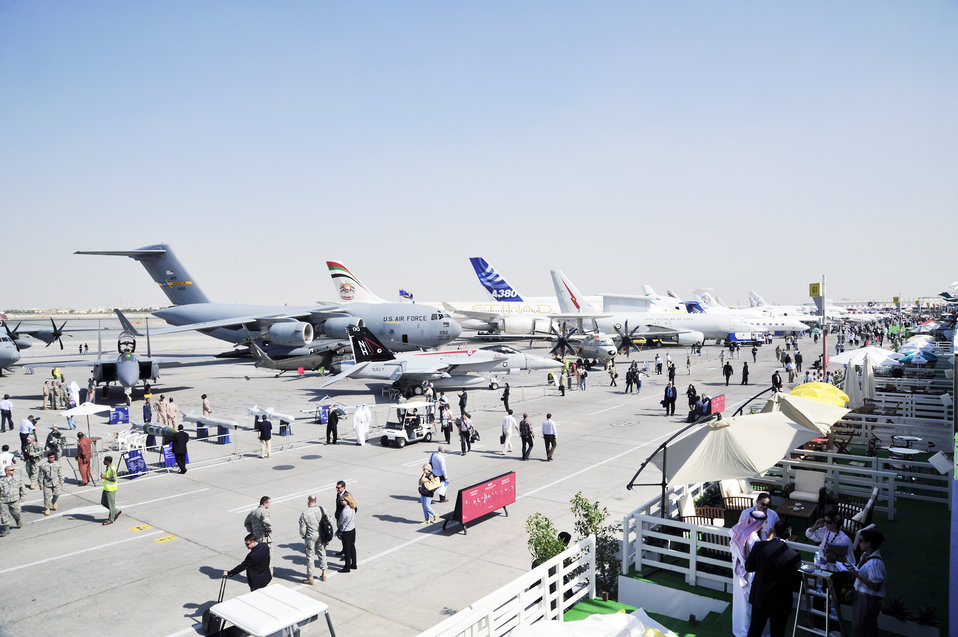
Dubai Air Show

The Dubai Air Show features Department of Defense aircraft and civilian passenger aircraft Nov. 15, 2009 in the United Arab Emirates. The air show was held at the Dubai International Airport Expo from Nov. 15 to 19.